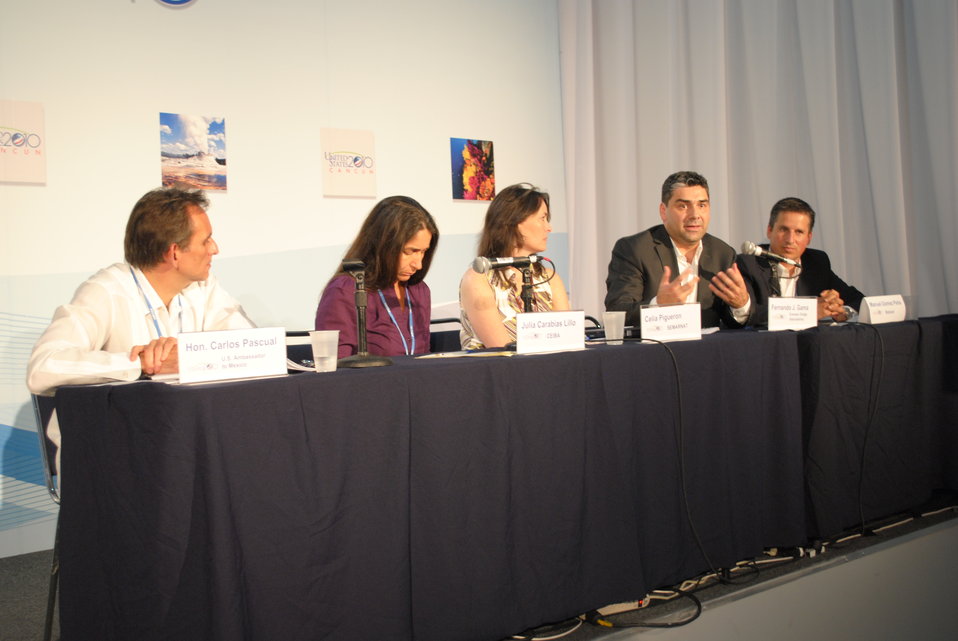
The U.S. and Mexico Bi-National Cooperation on Climate Change and Development Panel Responds to Questions

Members of the panel on the U.S. and Mexico Bi-National Cooperation on Climate Change and Development, including U.S. Ambassador to Mexico Carlos Pascual, left, listen to a question from the audience at the U.S. Center at COP-16 in Cancun, Mexico, on December 8, 2010.